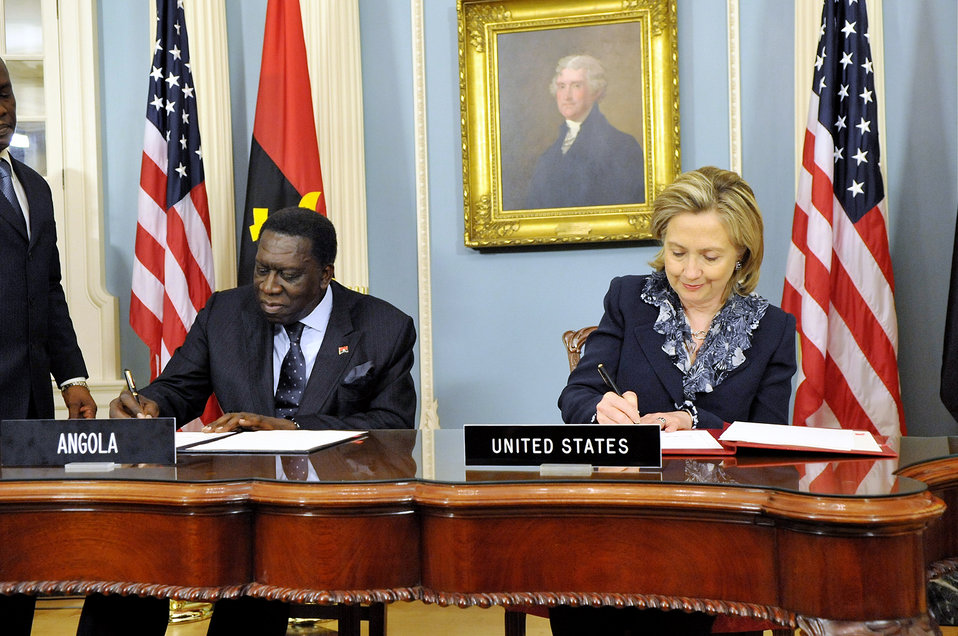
Secretary Clinton and Angolan Foreign Minister Asuncao Afonso dos Anjos Sign a Memorandum of Understanding

U.S. Secretary of State Hillary Rodham Clinton and Angolan Foreign Minister Asuncao Afonso dos Anjos sign a memorandum of understanding establishing the U.S.-Angola Strategic Partnership Dialogue at the U.S. Department of State in Washington, D.C., on July 8, 2010.